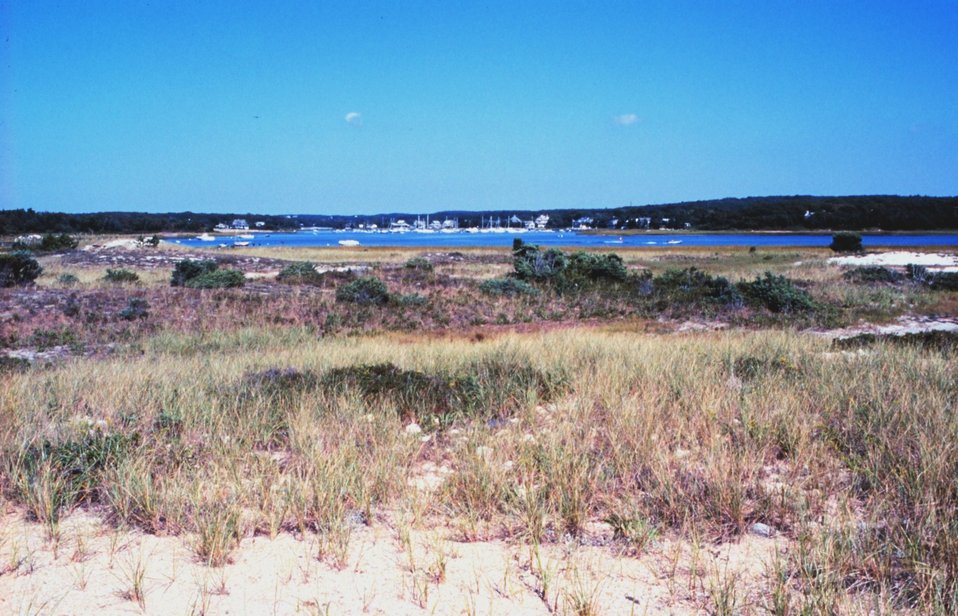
West Falmouth Harbor